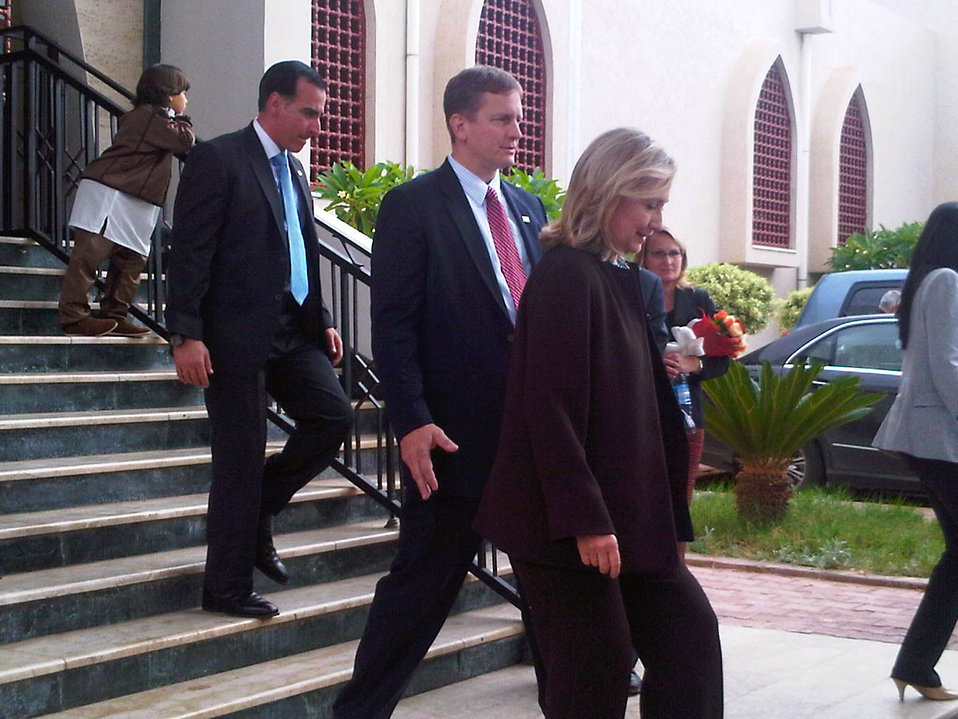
Secretary Clinton Departs Meeting With TNC President Jalil

U.S. Secretary of State Hillary Rodham Clinton departs the World Islamic Call Society Headquarters after meeting with Transitional National Council (TNC) Prime Minister Mahmoud Jibril in Tripoli, Libya, on October 18, 2011.